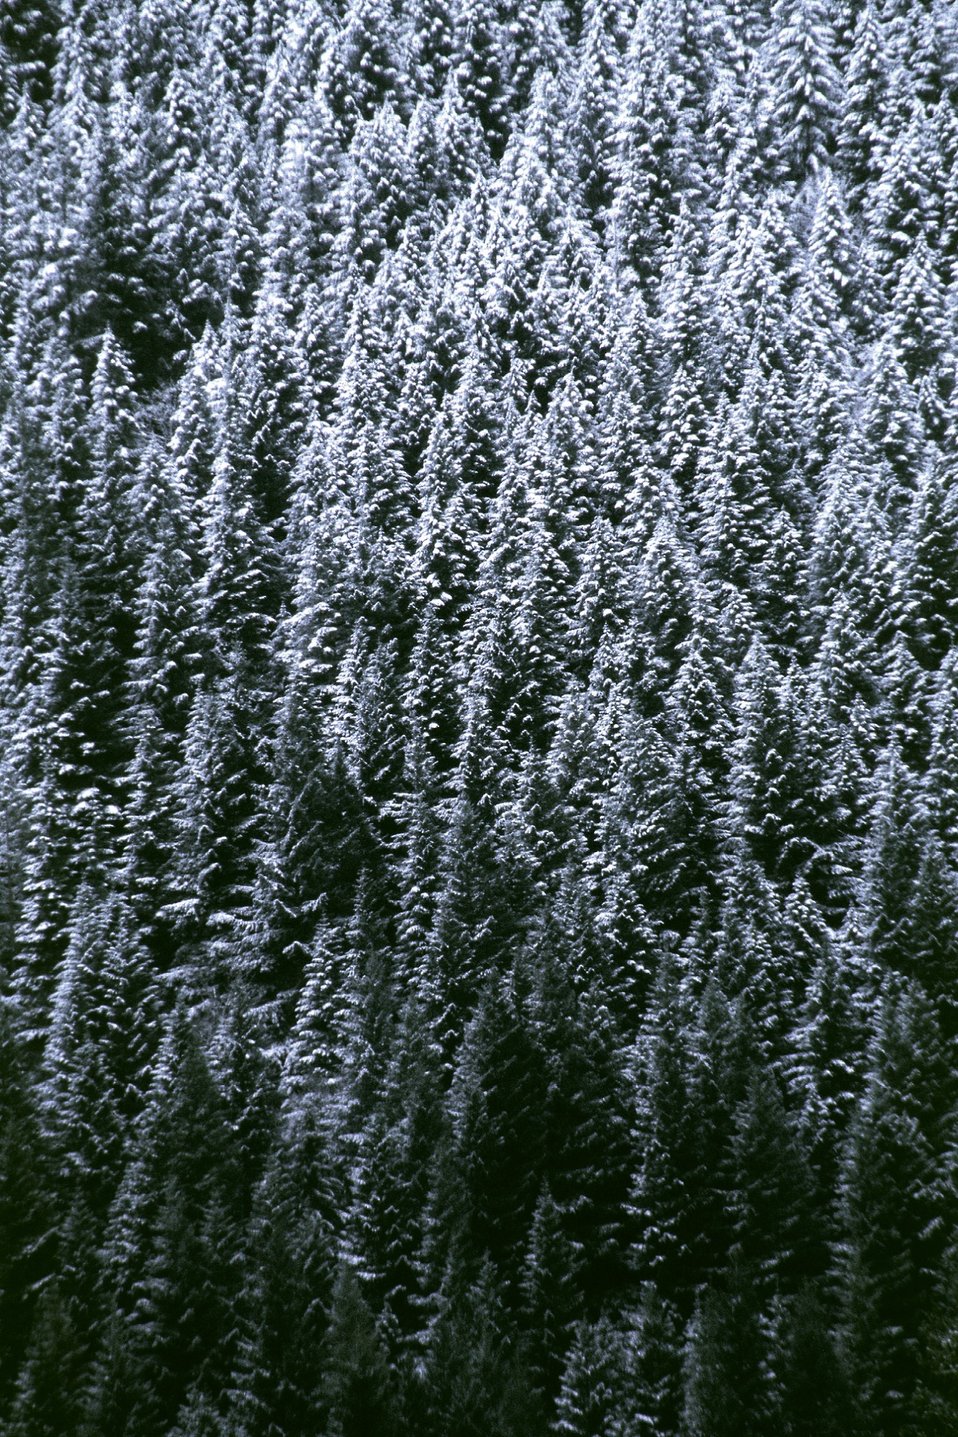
Mid Winter forest scene in the Mollala Corridor.